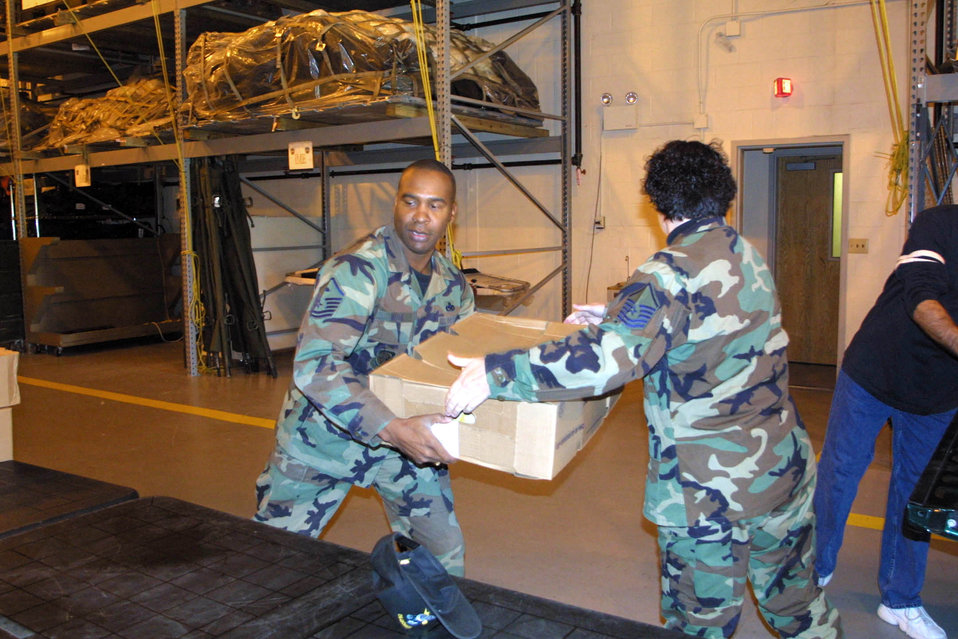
Thanks 'giving'

POPE AIR FORCE BASE, N.C. -- Master Sgt. John Mason helps unload boxes of turkeys Nov. 21 destined for Thanksgiving baskets. The First Sergeant's Council here assembled 175 baskets to be given to needy families. Each basket contained a turkey, stuffing, potatoes, rolls, cranberry sauce, green beans and a pie. The baskets were paid for by donations from various private base organizations. Mason is the first sergeant for the 43rd Operations Support Squadron.